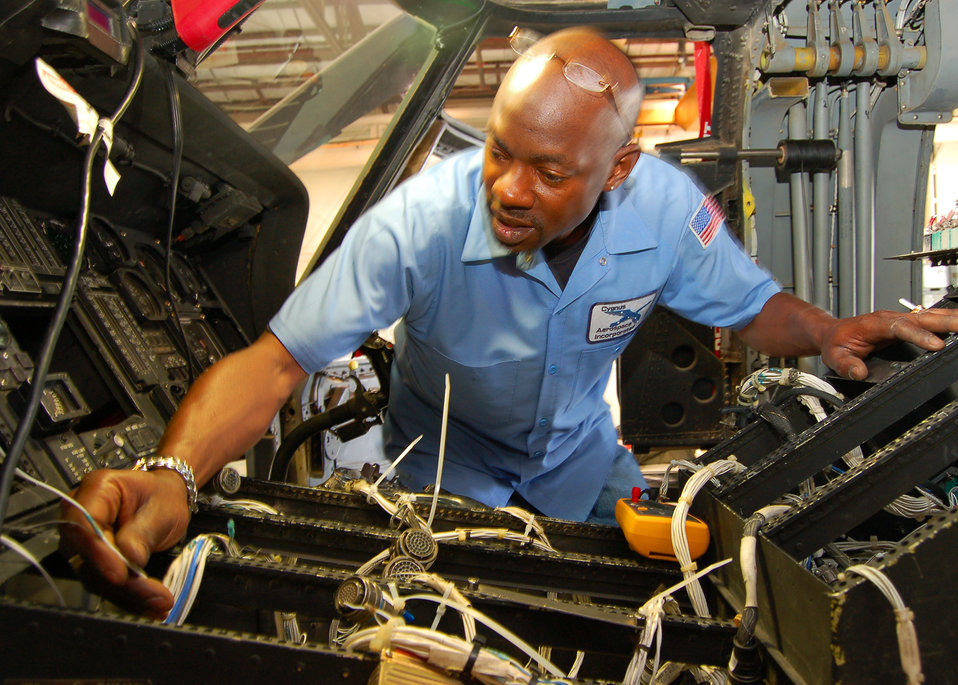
Pave Hawk Upgrade

Willie Baker, an avionics technician with Cygnus Aerospace Inc., installs a wiring harness for a Night Vision Imaging System lighting upgrade March 26 in a HH-60G Pave Hawk assigned to the 41st Rescue Squadron at Moody Air Force Base, Ga.